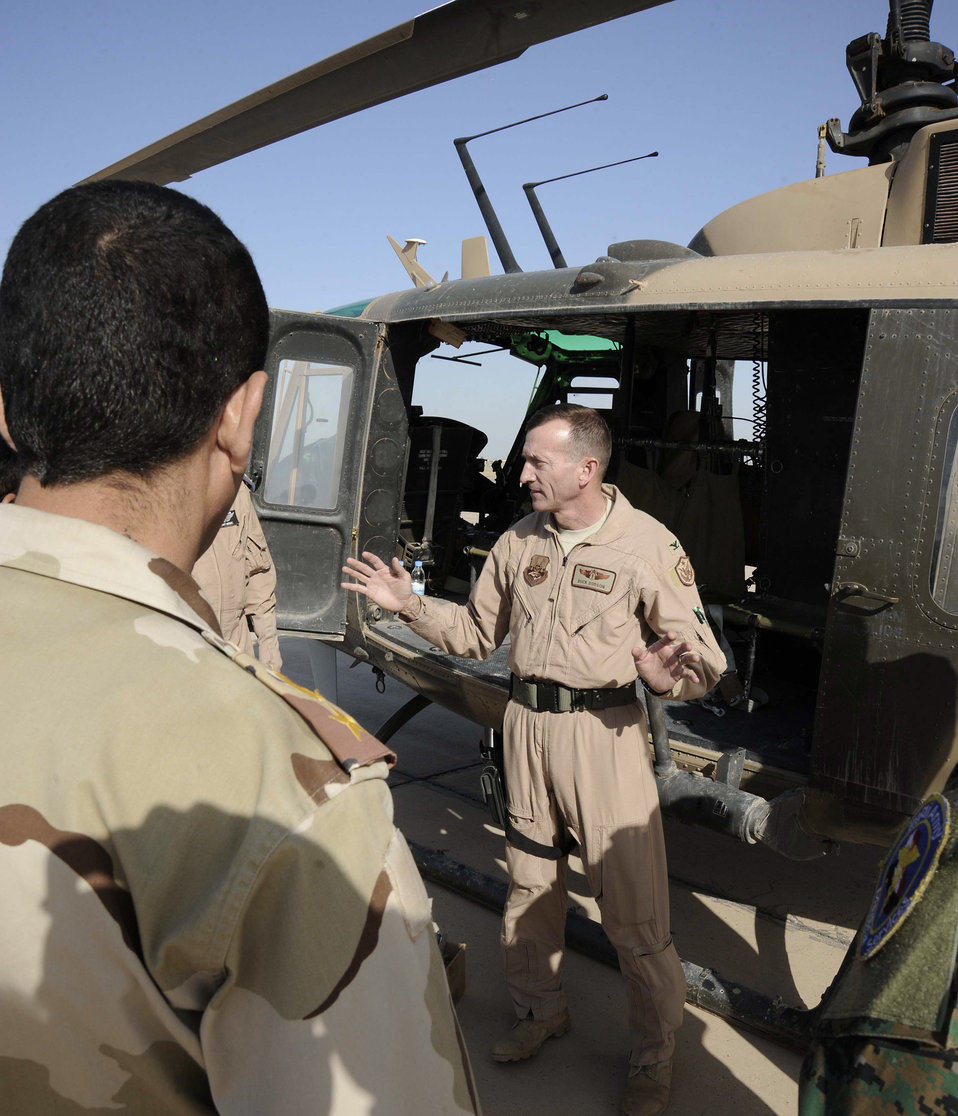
Air Force flight surgeons train Iraqi counterparts

Col. William Dodson advises seven Iraqi air force and Iraqi army physicians during the aeromedical evacuation class at the flight surgeon course April 20 at New al-Muthana Air Base, Iraq. The training is teaching the Iraqis how to convert a UH-1 Huey and a C-130 Hercules from a passenger transport to an aeromedical evacuation medevac transport. Colonel Dodson is a Coalition Air Force Training Team member deployed from McGuire Air Force Base, N.J. He is a native of Harrisburg, Pa.